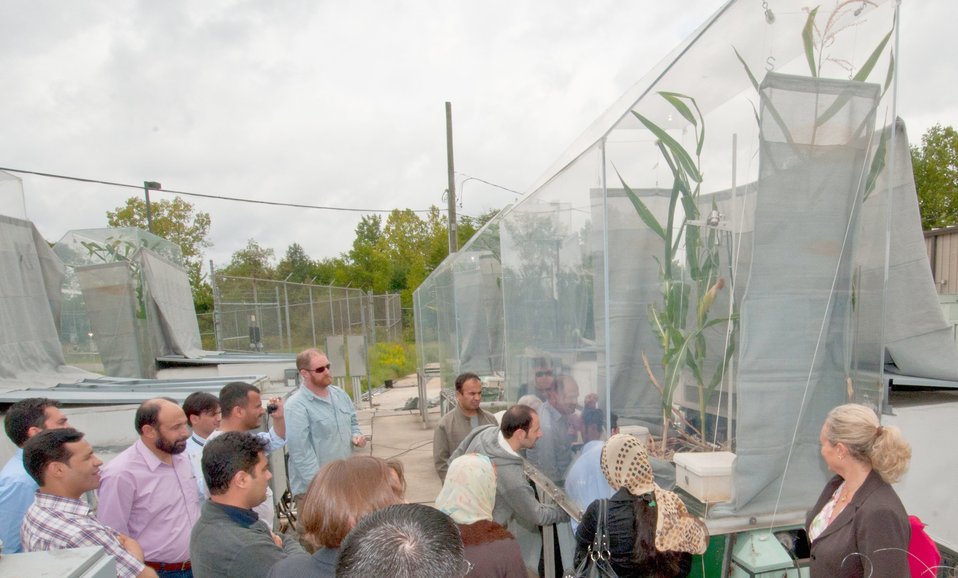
U.S. Department of Agriculture (USDA), Agriculture Research Service's (ARS) Jackson Fisher (blue shirt and sunglasses), invited the 12 Borlaug Fellows from Afghanistan’s Ministry of Agriculture, Irrigation and Livestock (MAIL) to get an inside and close-up view of the Global Climate Change Lab and the Soil Plant Atmosphere Research (SPAR) units in Beltsville, MD, on Wednesday, September 21, 2011. SPAR units provide precise control of the major environmental variables influencing crop growth including temperature, humidity, and atmospheric carbon dioxide concentration. The SPAR units are fully automated to measure crop canopy gas exchange including photosynthesis, respiration, transpiration and water use efficiency.